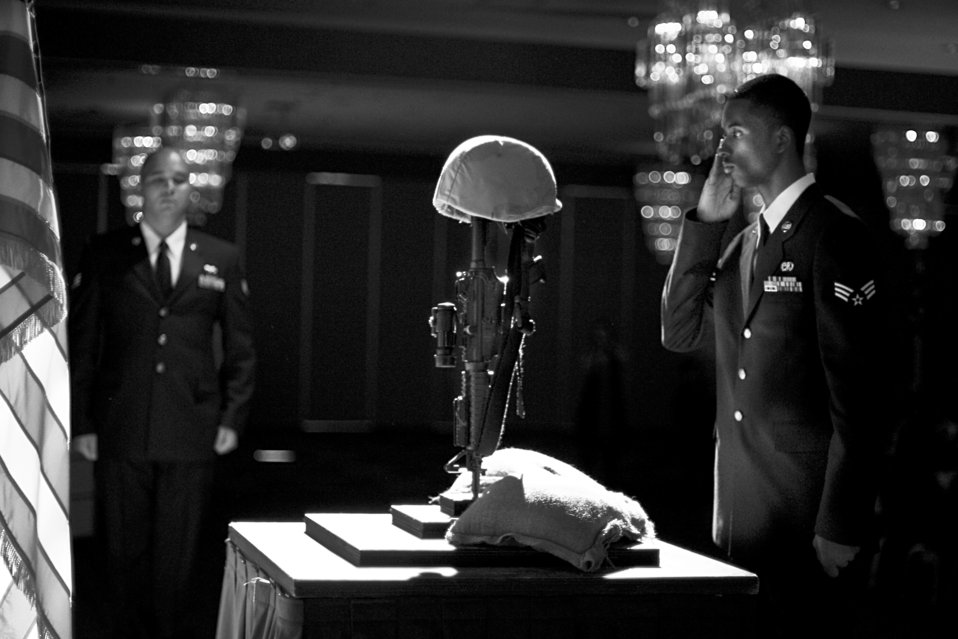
Airmen honor the fallen

Airmen participate in a Fallen Warriors presentation during an Airman Leadership School graduation May 20, 2010, at the collocated cub in Misawa Air Base, Japan.